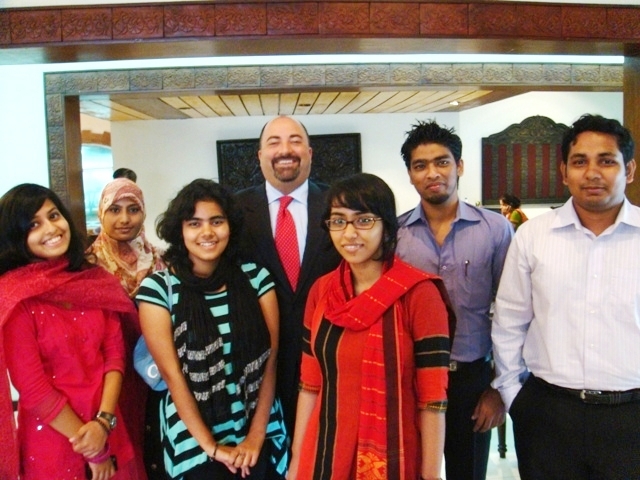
ADAS Keshap Poses for a Photo With Bangladeshi Youth Community Leaders

U.S. Acting Deputy Secretary of State for South and Central Asian Affairs Atul Keshap poses for a photo with Bangladeshi youth community leaders in Dhaka, Bangladesh, on July 26, 2010.